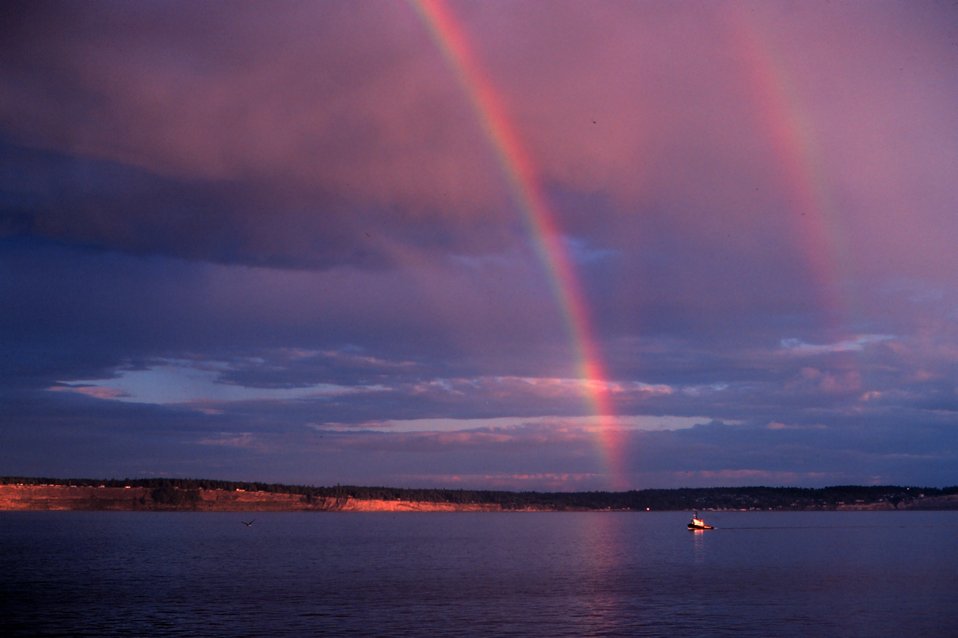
A spectacular double rainbow.